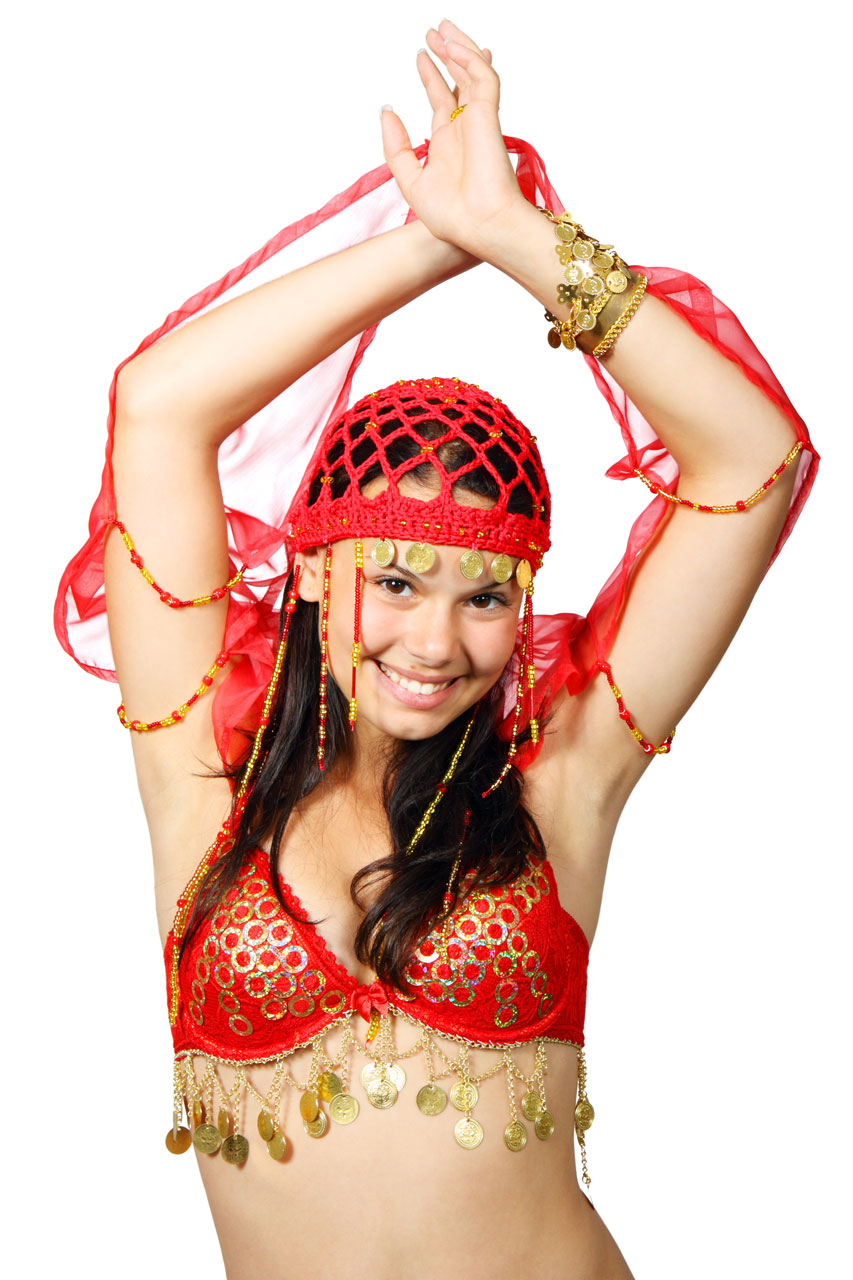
Oriental dancer

Young oriental dancer.